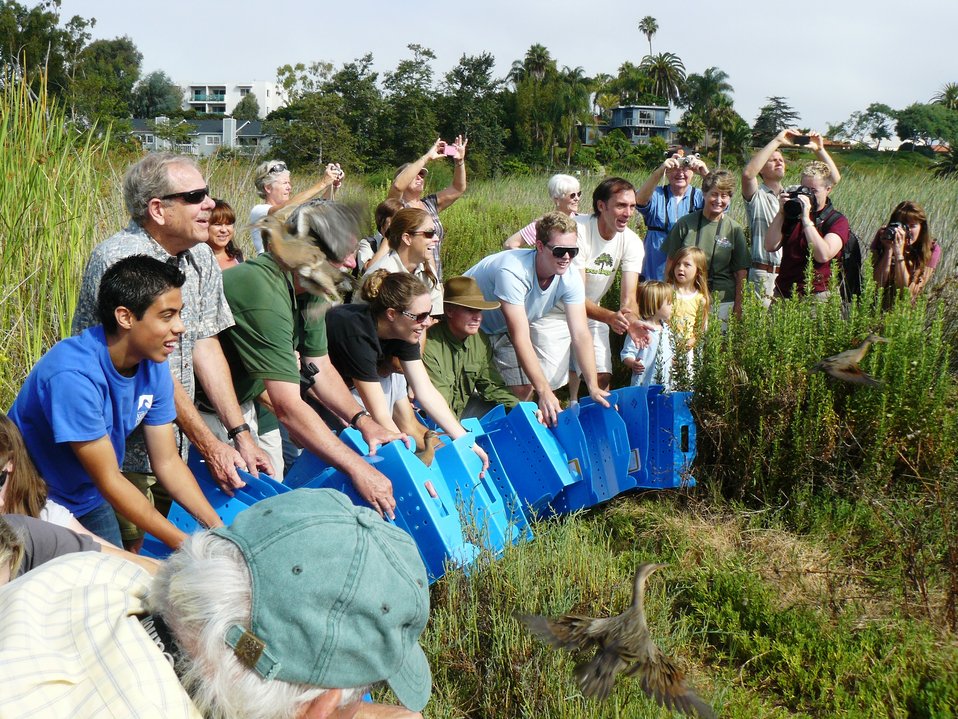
Light-footed clapper rails released

Fifteen endangered light-footed clapper rails were released to the wild July 19, 2011, at Buena Vista Lagoon, Oceanside, CA.